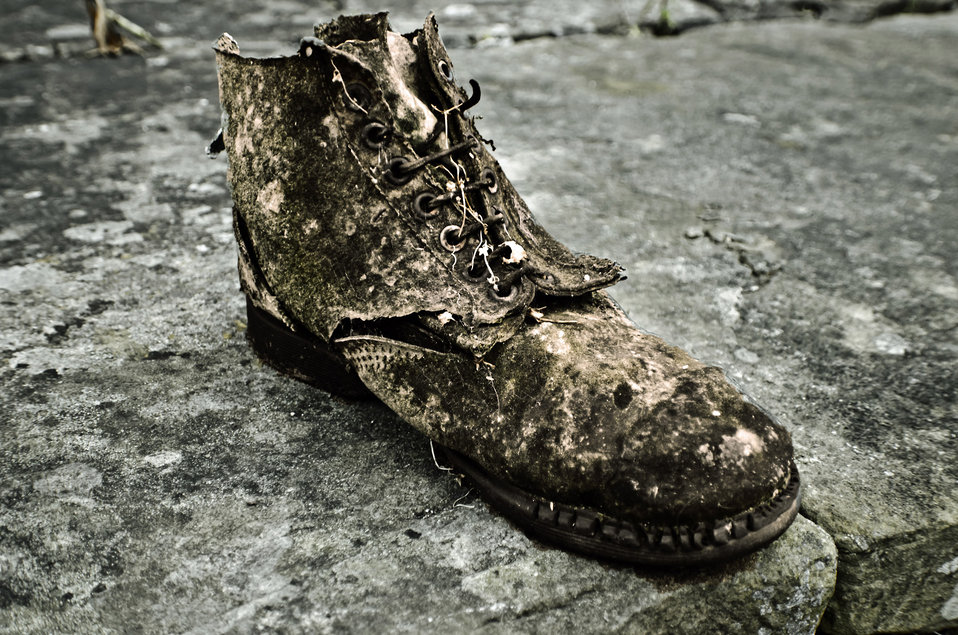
The old shoe.